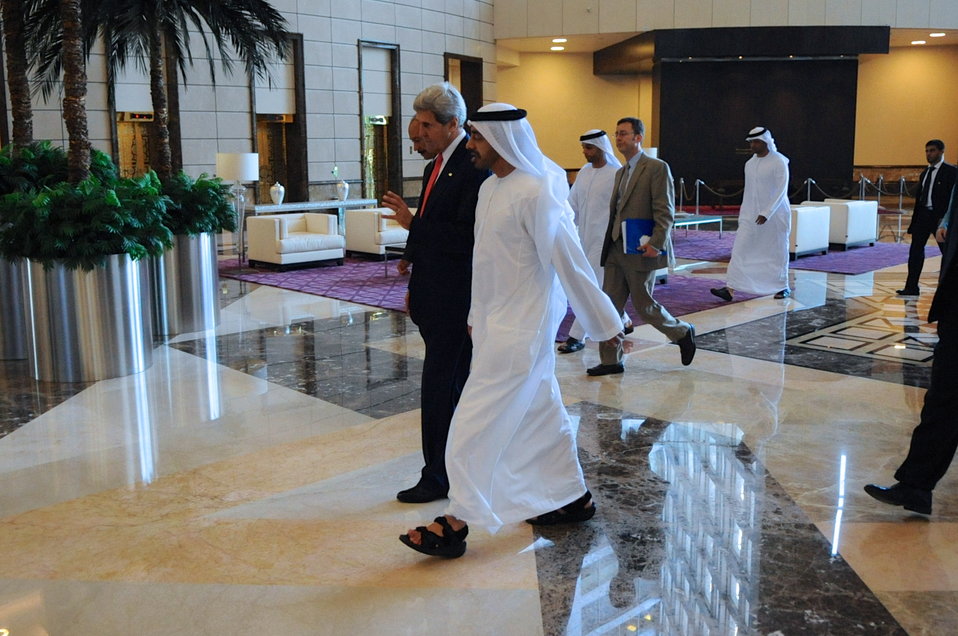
Secretary Kerry Walks With UAE Minister of Foreign Affairs al Nayhan

U.S. Secretary of State John Kerry walks with UAE Minister of Foreign Affairs Abdullah bin Zayed Al Nayhan through the Ministry of Foreign Affairs en route to a meeting in Abu Dhabi, United Arab Emirates, on November 11, 2013.